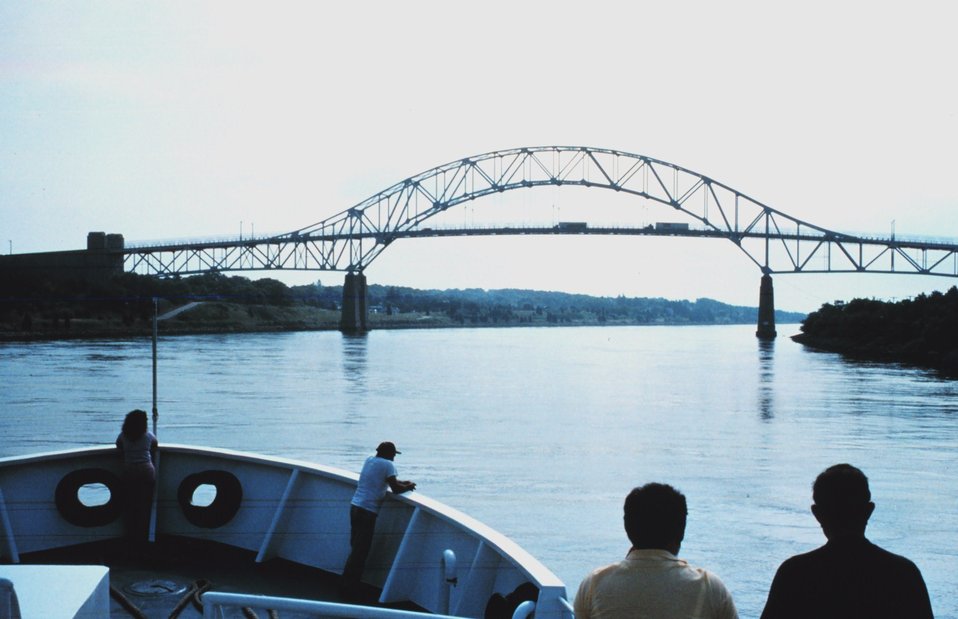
ALBATROSS IV transiting the Cape Cod Ship Canal approaching the Sagamore Bridge.